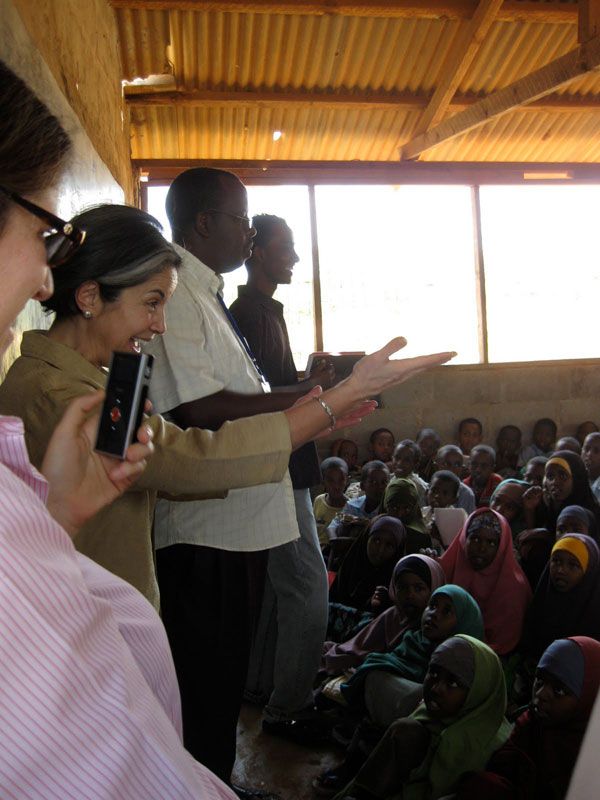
Under Secretary Otero Visits Kenyan Classroom

U.S. Under Secretary for Democracy and Global Affairs Maria Otero visits a classroom, January 29, 2010, Dadaab, Kenya.